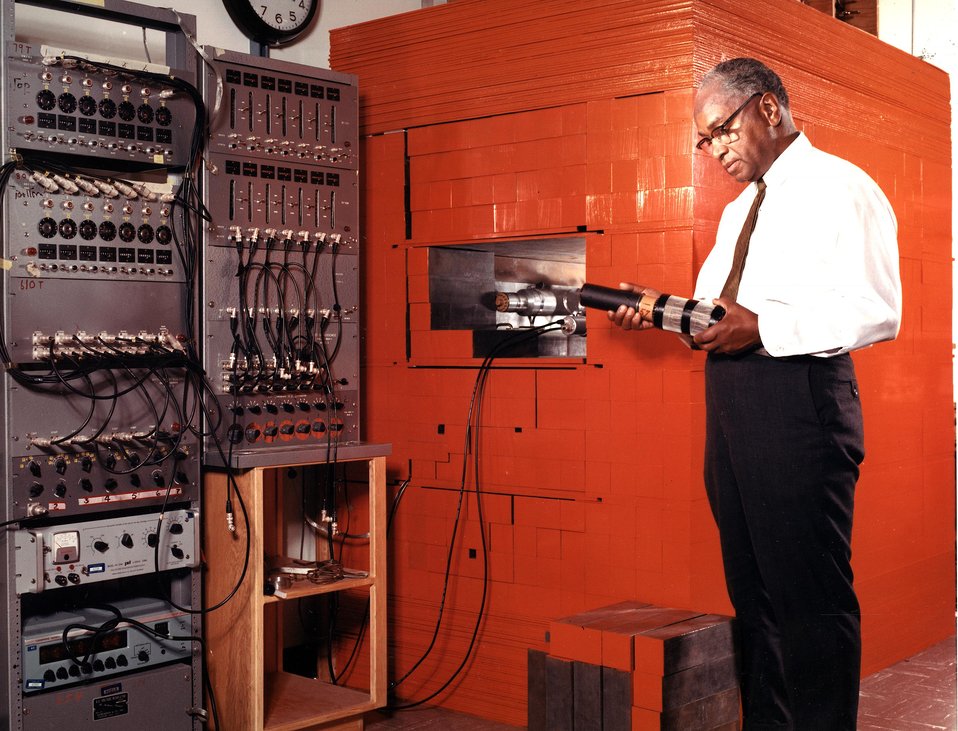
Low level facility used for determining the radioactivity induced in naturally occurring materials from terrestrial and extraterrestrial sources. c. 1966